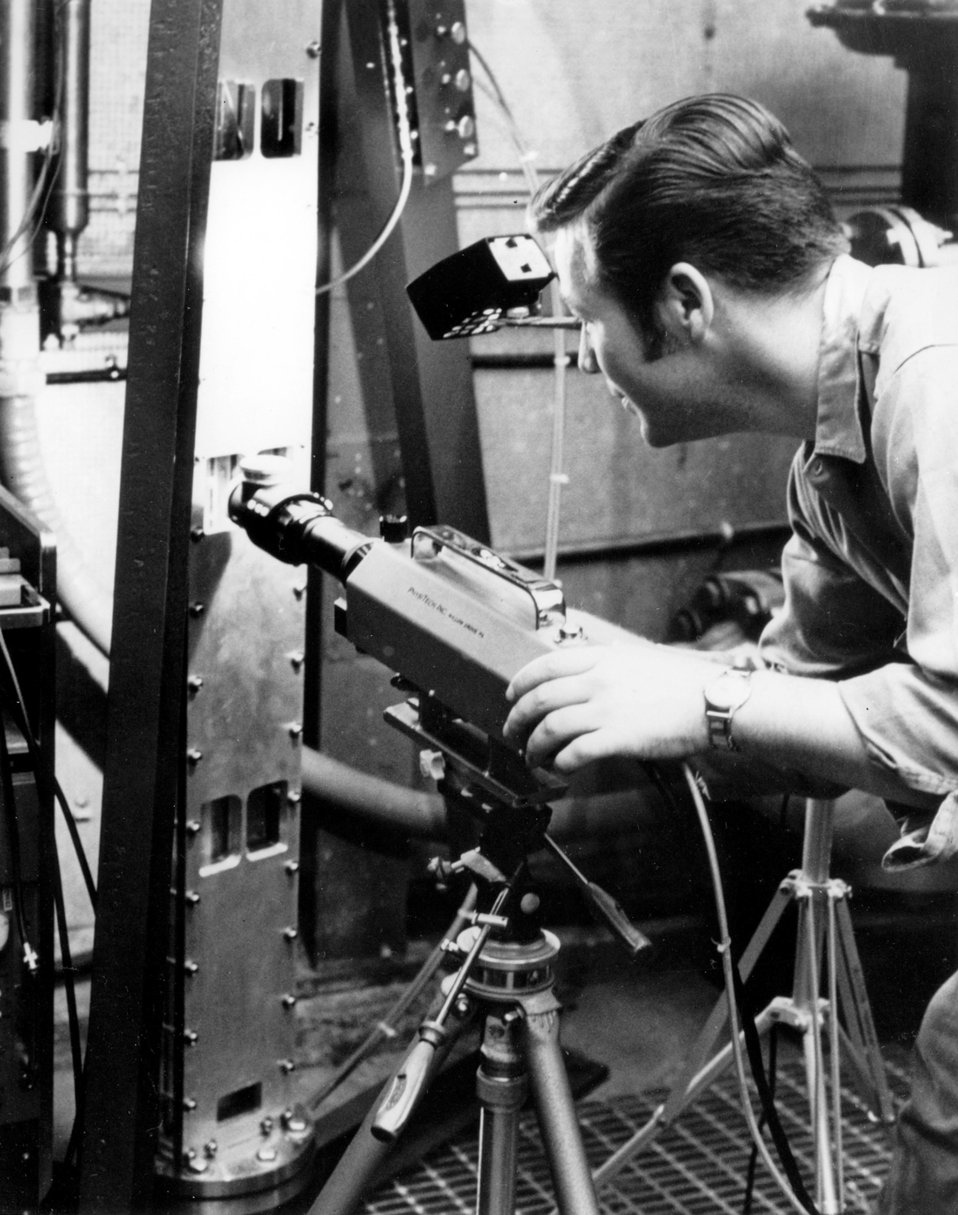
Vibration coefficients of experimental reactor fuel elements are determined at Argonne through the use of optical tracking instrument.
c.1970